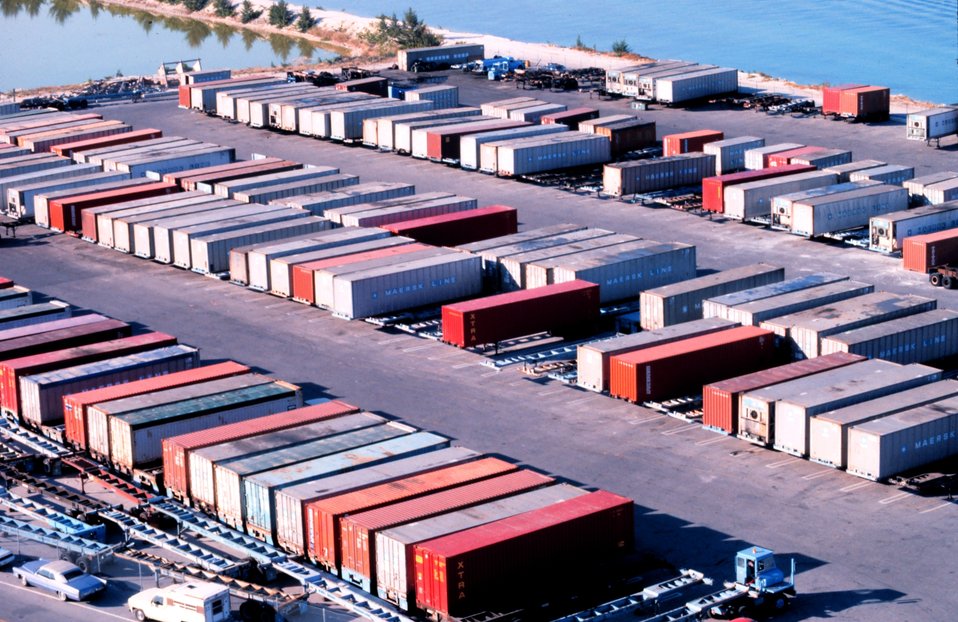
Containers at the Port of Oakland.